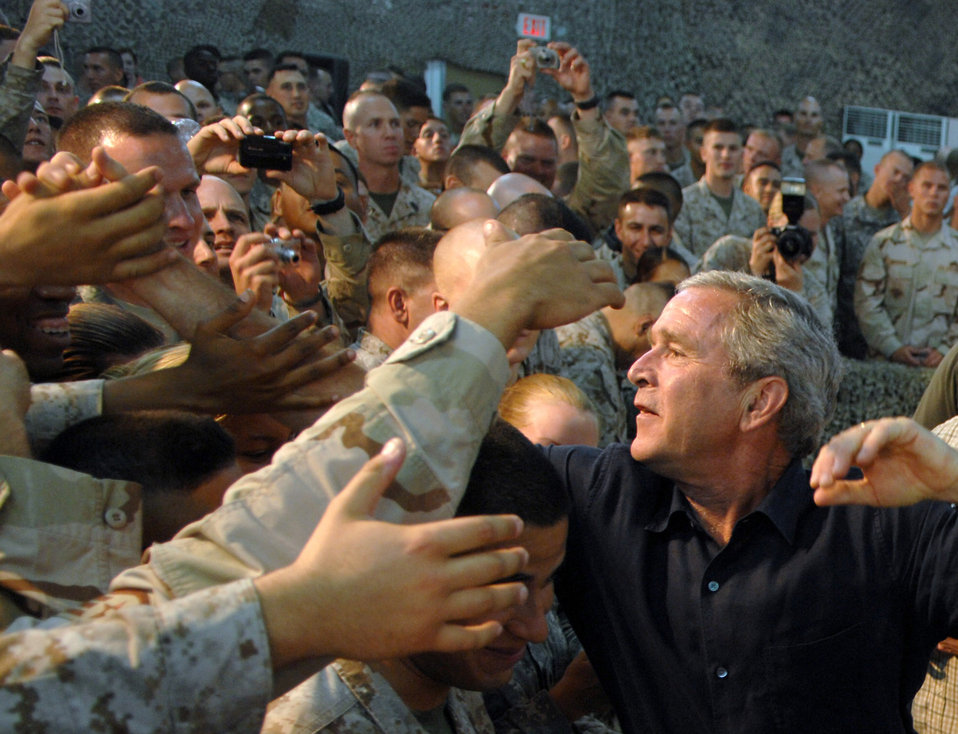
Thanking the troops

President George W. Bush shakes hands with troops during a surprise Labor Day visit to Iraq Sept. 3. The president thanked the troops for their hard work and said he was proud to be their commander-in-chief.